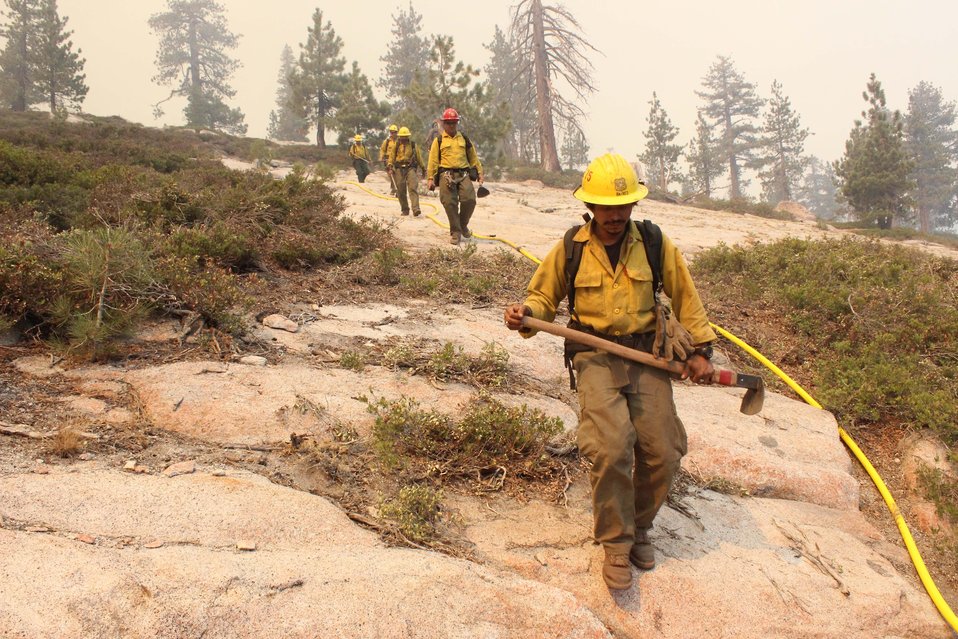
Firefighters work on the Southeast flank of the Rim Fire. The Rim Fire in the Stanislaus National Forest near in California began on Aug. 17, 2013 and is under investigation. The fire has consumed approximately 256,169 acres and is 84% contained.